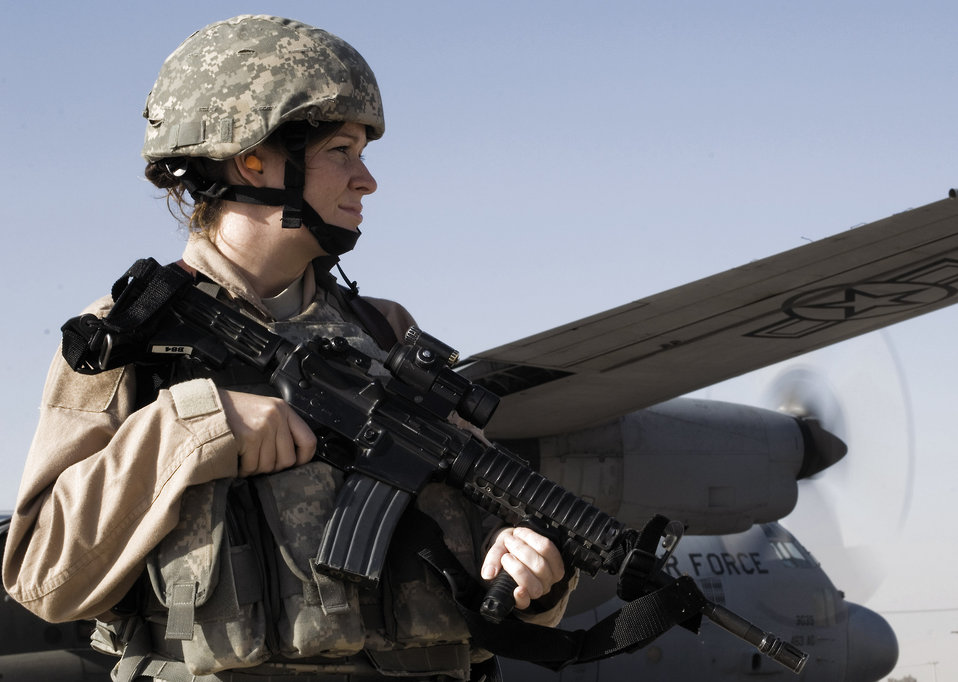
Airmen provide FAST coverage

Senior Airman Michelle Kendall scans the area while providing ground security for a 777th Expeditionary Airlift Squadron C-130 Hercules Nov. 22 at a remote location in Iraq. Airman Kendall is a member of a 332nd Expeditionary Security Forces Squadron Fly Away Security Team. She is deployed from Andrews Air Force Base, Md., and her hometown is Houston, Pa.